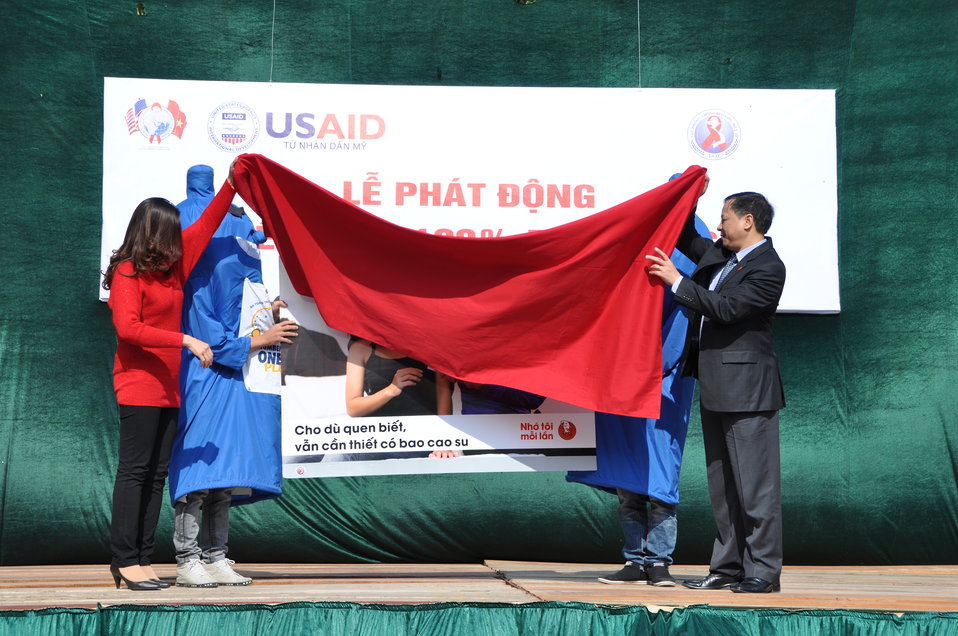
100% Condom Use Campaign Launch, Dec. 2, 2011